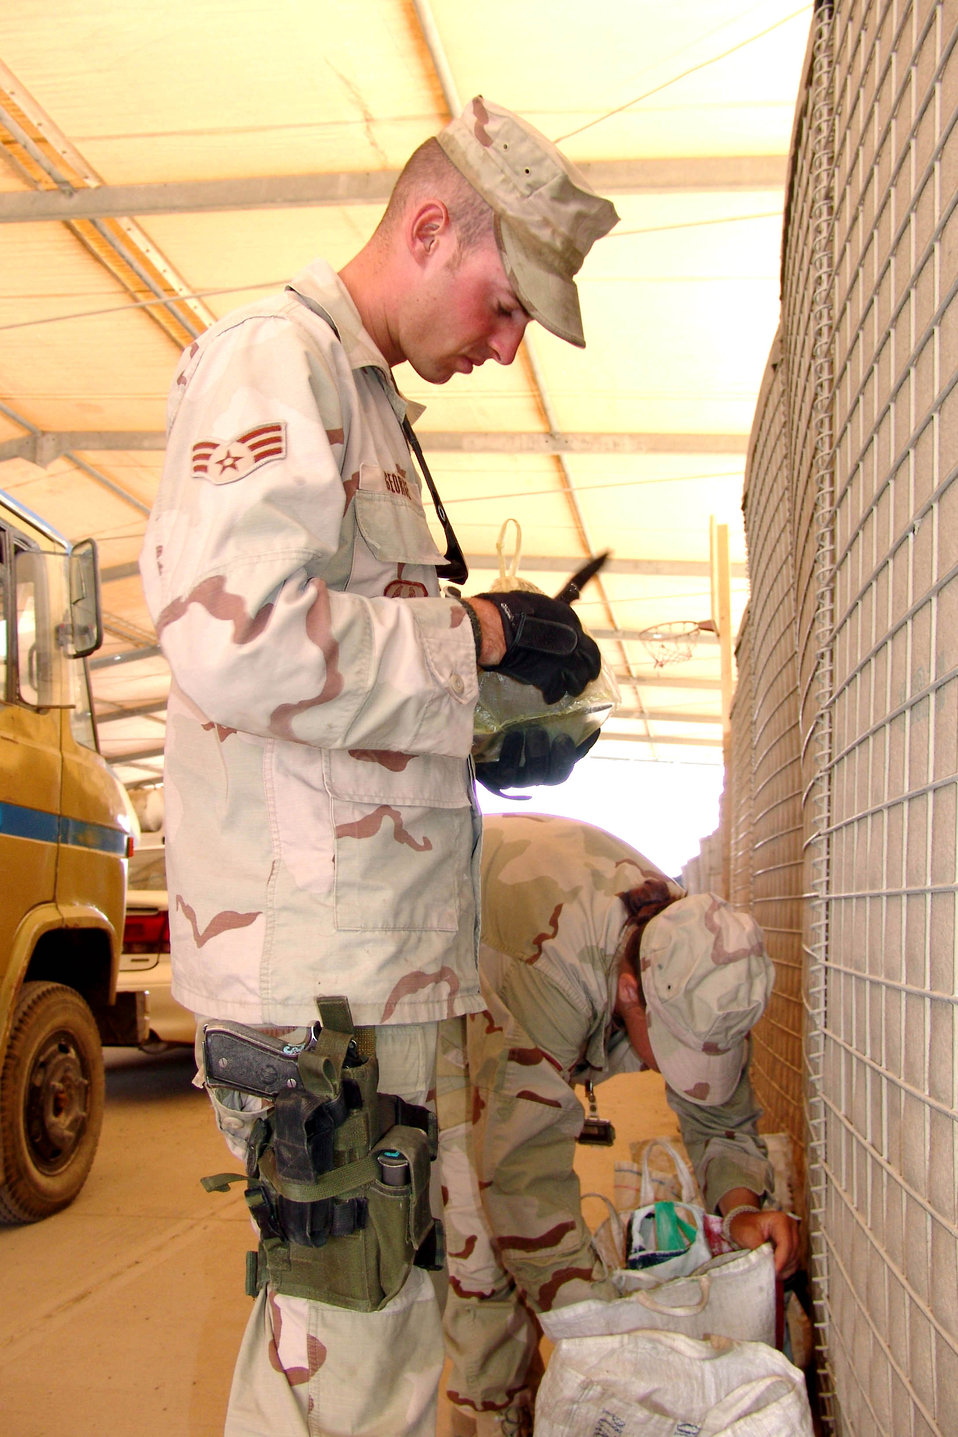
Security forces Airmen keep contraband off Kirkuk

KIRKUK AIR BASE, Iraq -- Senior Airman Jeff George looks in a third-country national's lunchbox to ensure it does not contain contraband. Search area Airmen search all people and vehicles entering the base. Airman George is assigned to the 506th Expeditionary Security Forces Squadron here.